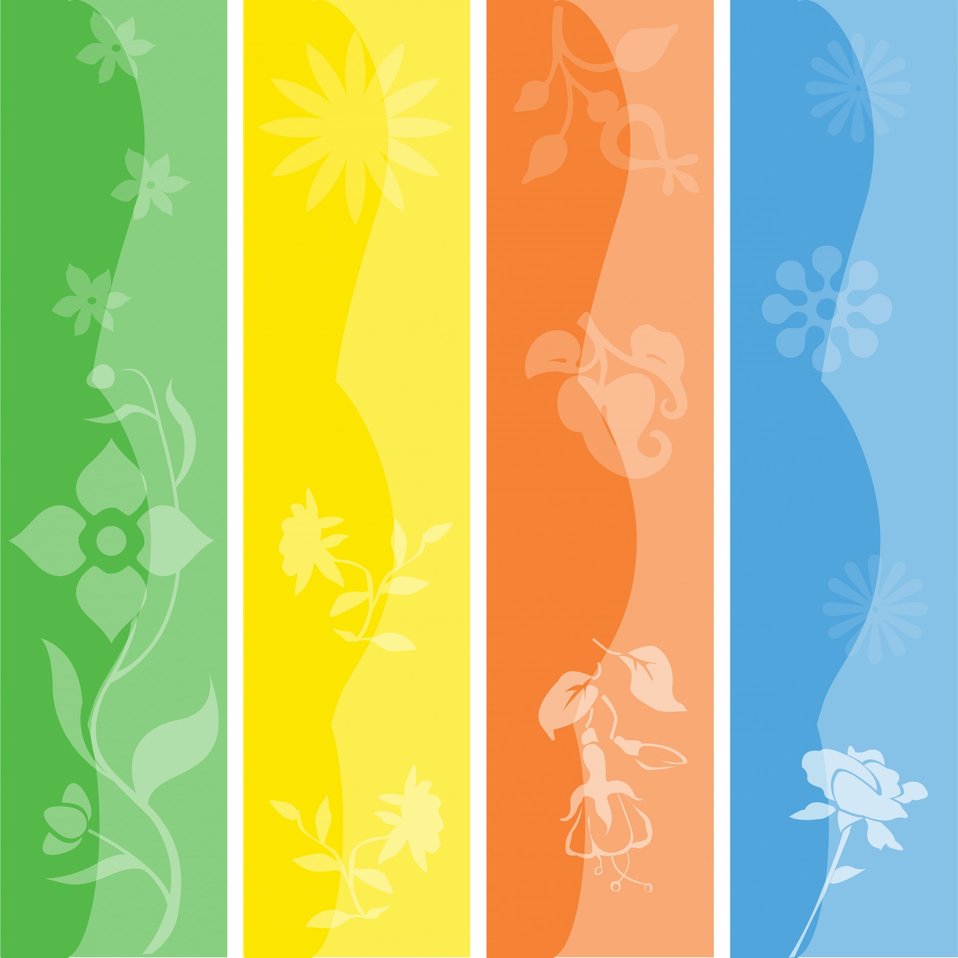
Floral colorful seasonal banners

Colorful floral banners or bookmarks for scrapbooking.